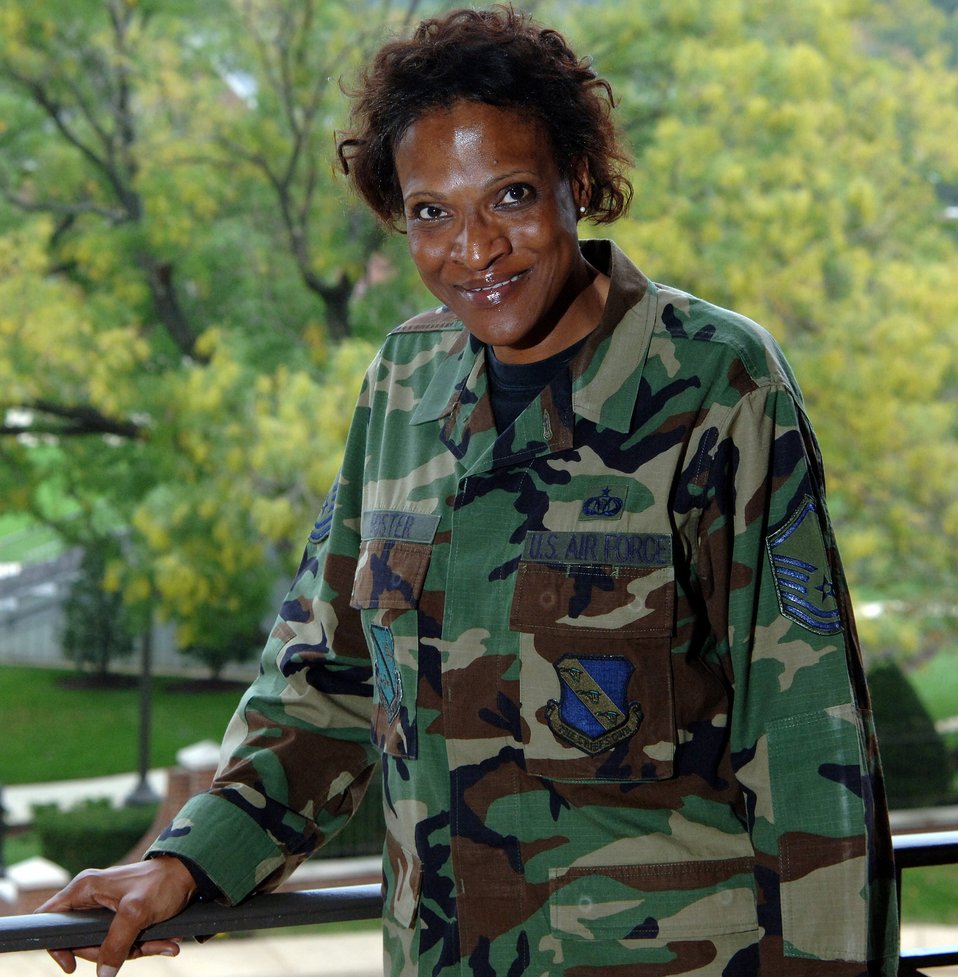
Air Force Memorial a reflection of every Airman

Master Sgt. Valarie Foster stands on a balcony of the wing headquarters building, Oct. 11 at Bolling Air Force Base, D.C. Sergeant Foster is a supervisor of the operations center with the District of Washington